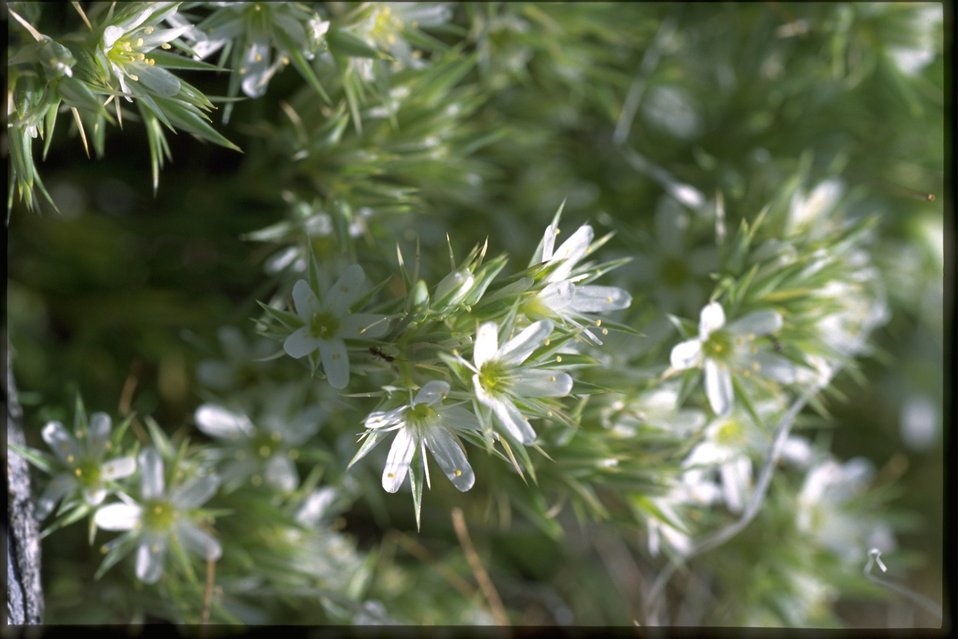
Closeup shot of Polemoniaceae.